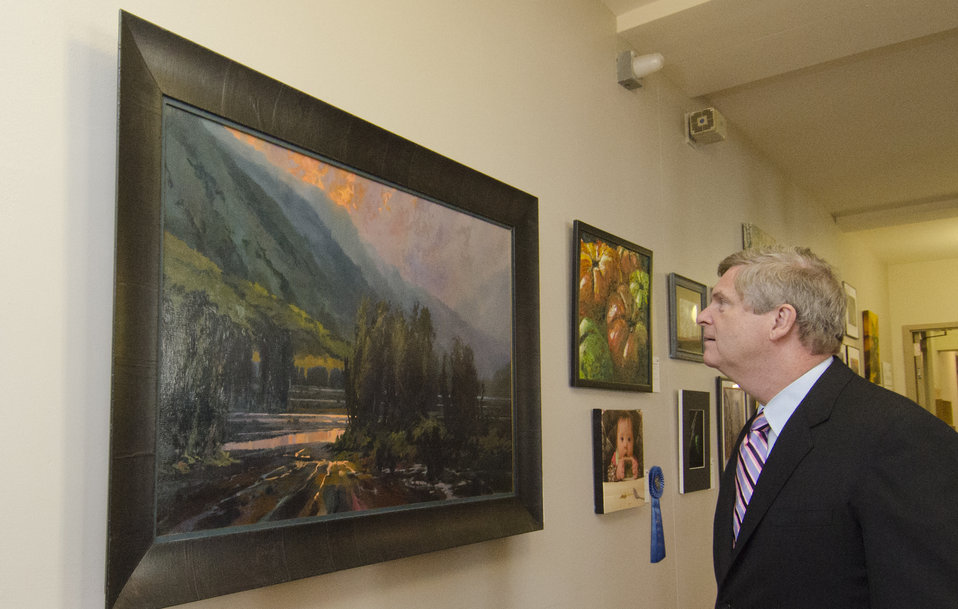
Agriculture Secretary Tom Vilsack visits the gallery of winning entries and some of the employee artists at the Art and Agriculture competition in the South Building, Washington, D.C on Thursday, May 31, 2012. U.S. Department of Agriculture (USDA) full-time and part-time employees submitted art based on ten agricultural themes. The event was part of USDA's 150th Anniversary celebration and the winning artwork is on display from May 15 through December 31, 2012. Artistic expression is a creative outlet that is vital for an individual to grow and develop in their environment.